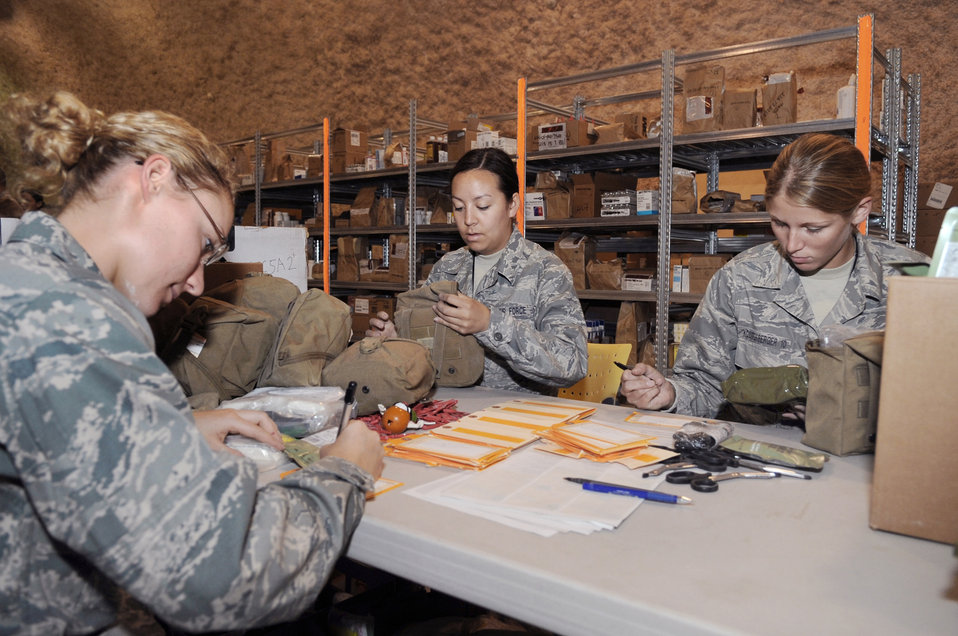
Cadets experience deployment tempo

U.S. Air Force Academy Cadets Mallory Morgan, Carrie Moore and Gina Koenigsberger go over the contents of an individual first aid kit during the cadet's visit of unit medical facilities June 25 at an air base in Southwest Asia. The cadets built the kits as part of their tour of the 379th Expeditionary Medical Group. Cadet Morgan hails from Parker, Texas, Cadet Moore is originally from Tucson, Ariz., and Cadet Koenigsbeger is native to Milwaukee, Wis. All are visiting from the Academy to learn and gain experience about operations Iraqi Freedom and Enduring Freedom.